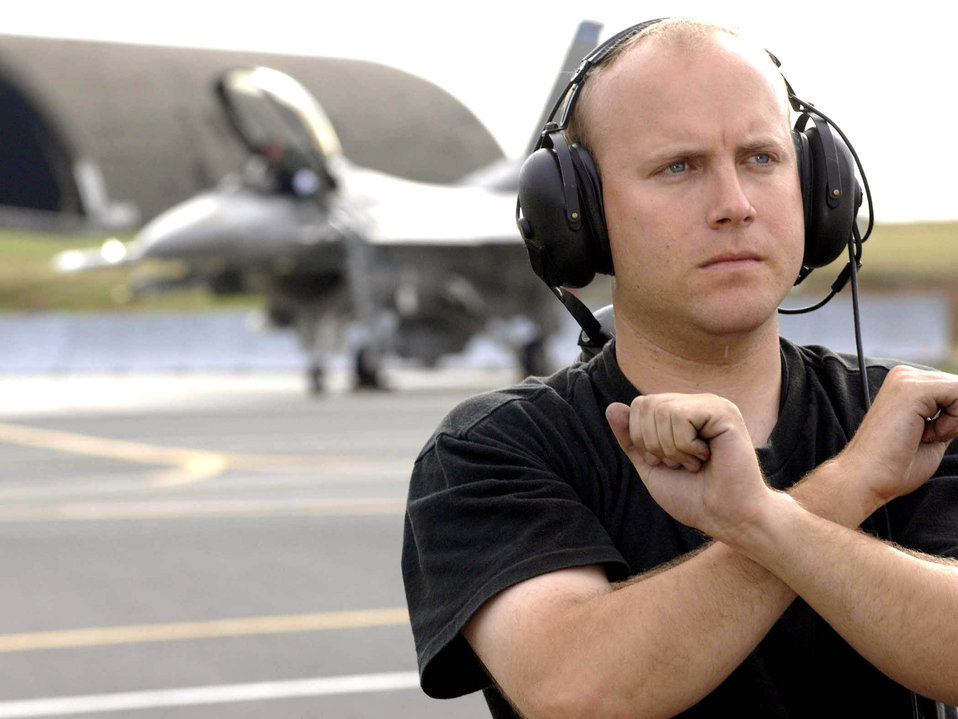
Mission complete

SPANGDAHLEM AIR BASE, Germany -- Staff Sgt. Bret Barlow marshals in an F-16 Fighting Falcon returning from a mission here. He is a crew chief with the 23rd Aircraft Maintenance Unit.